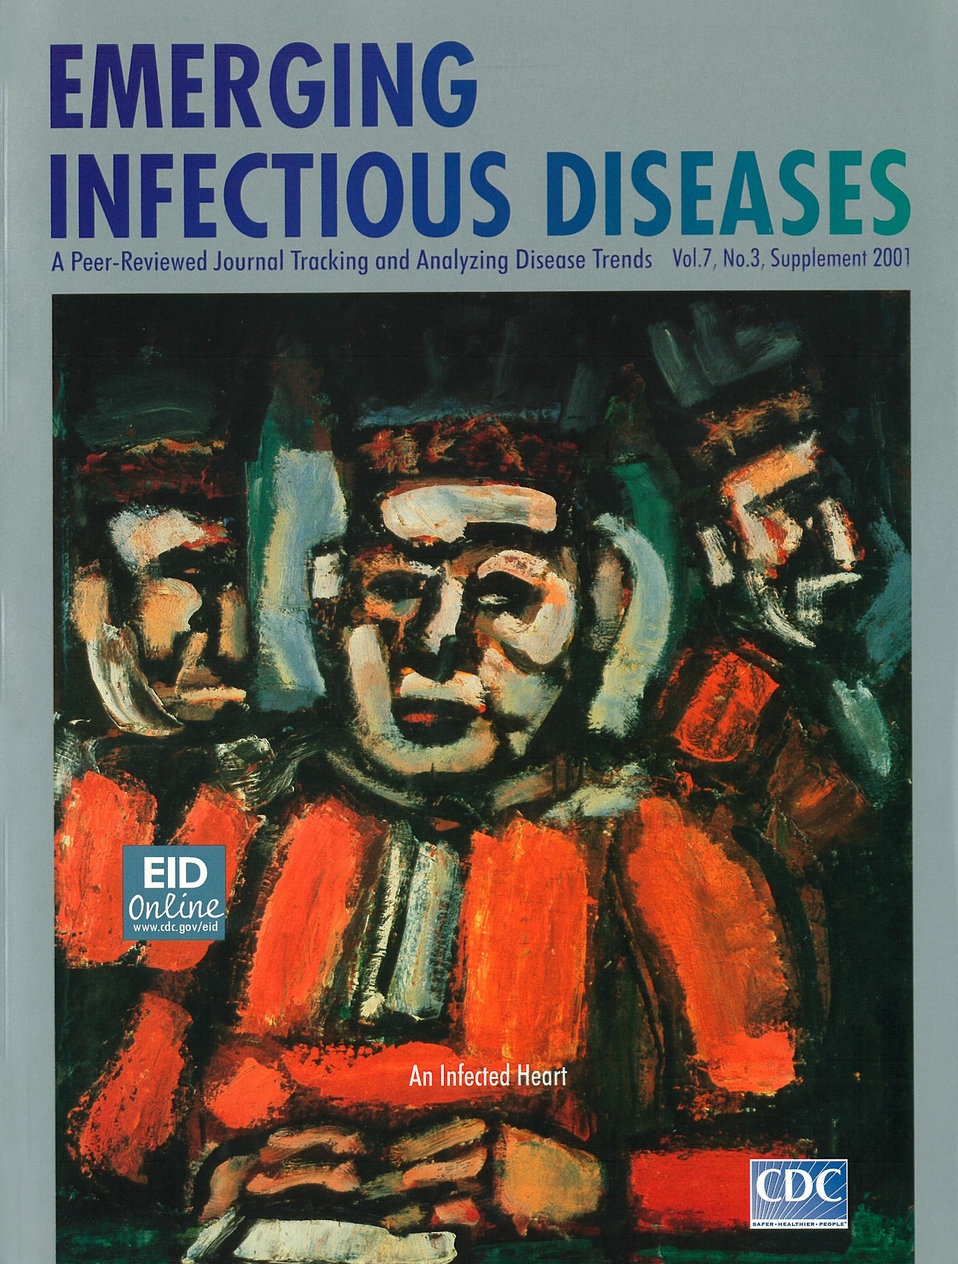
Emerging Infectious Diseases (EID) cover artwork for Volume 7, Number 3, Supplement 2001 issue.